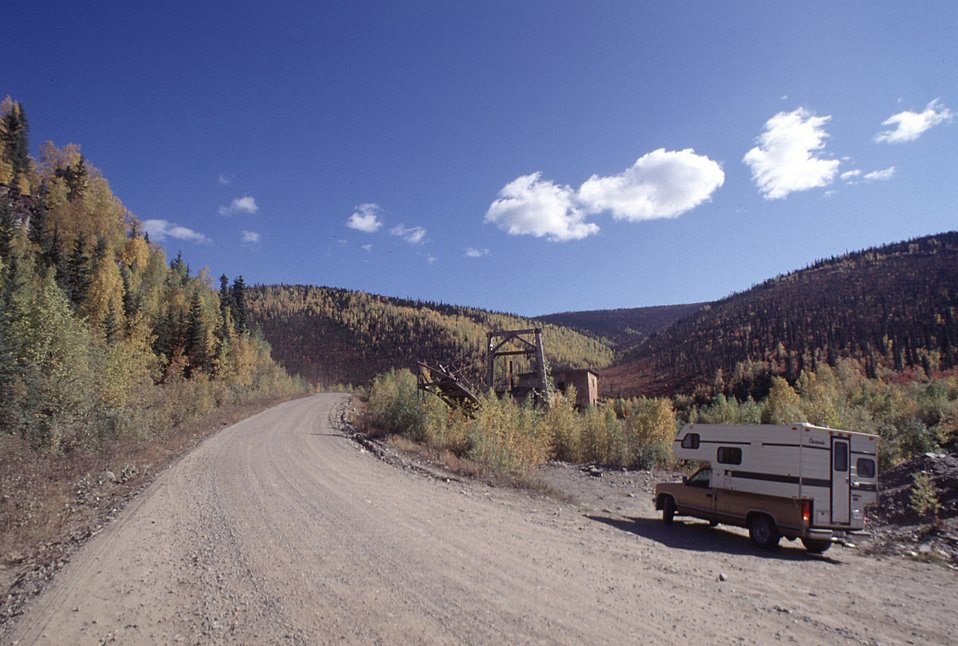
Fall colors along Taylor Highway near jack Wade Dredge